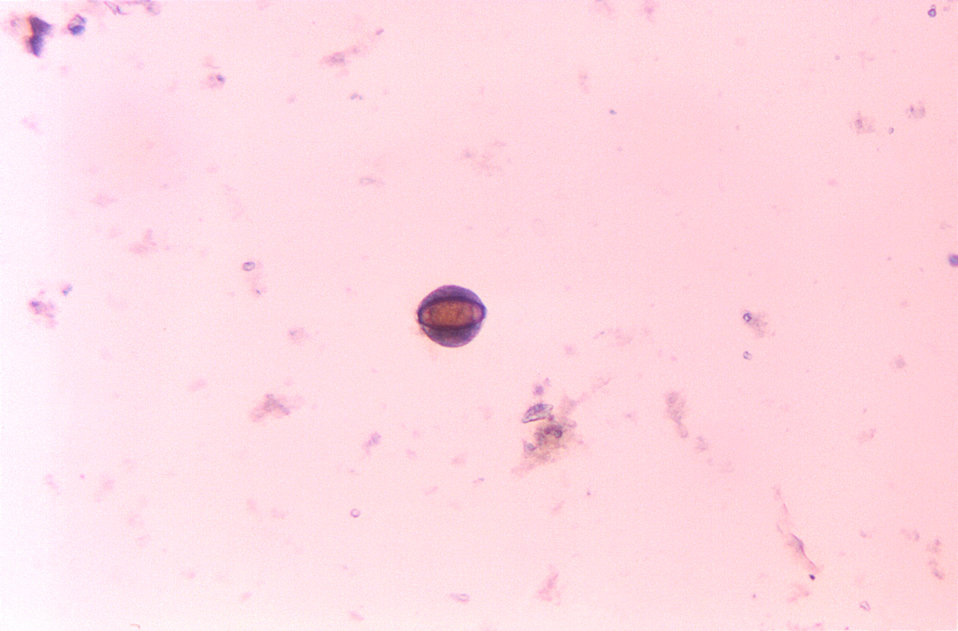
Balantidium coli cyst with Trichuris egg inside. Unstained wet mount. Protozoon, roundworm, nematode, parasite.